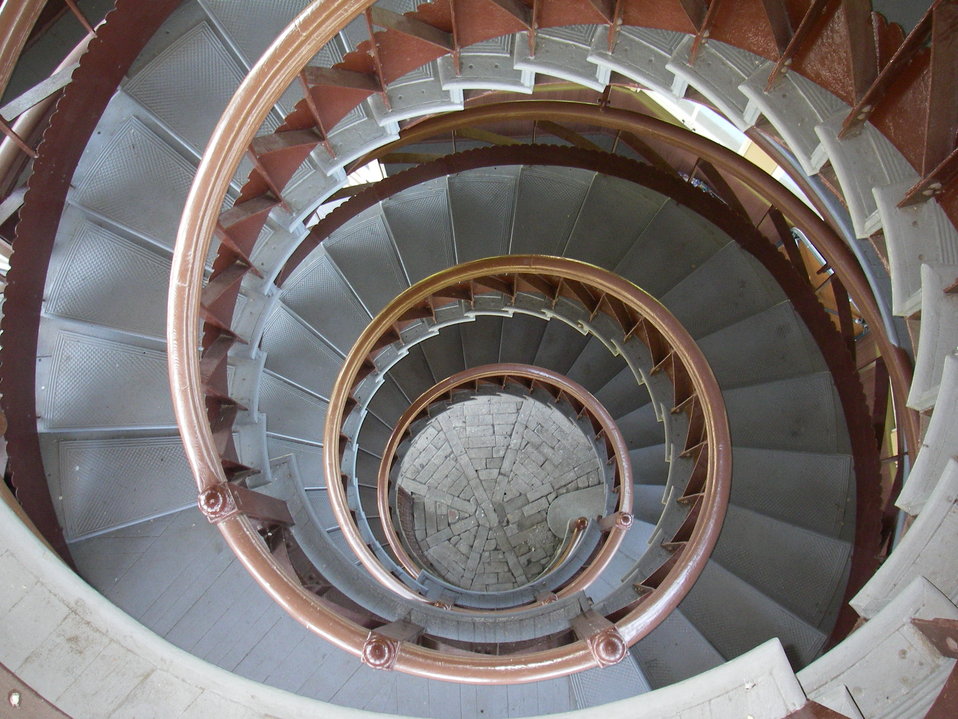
Looking down the spiral staircase of the Patterson Park Pagoda.